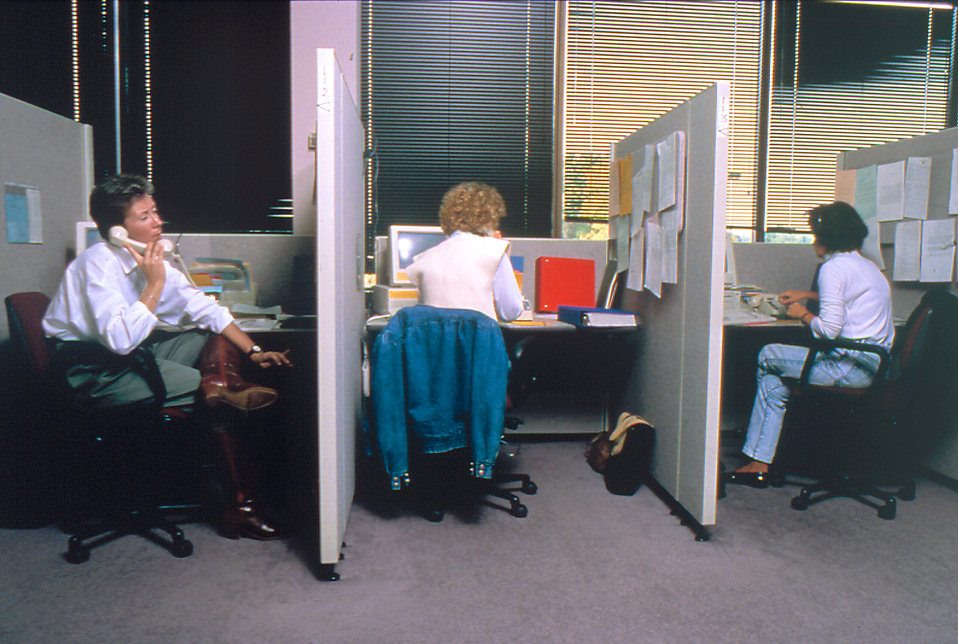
CDC employees manning AIDS hotline.